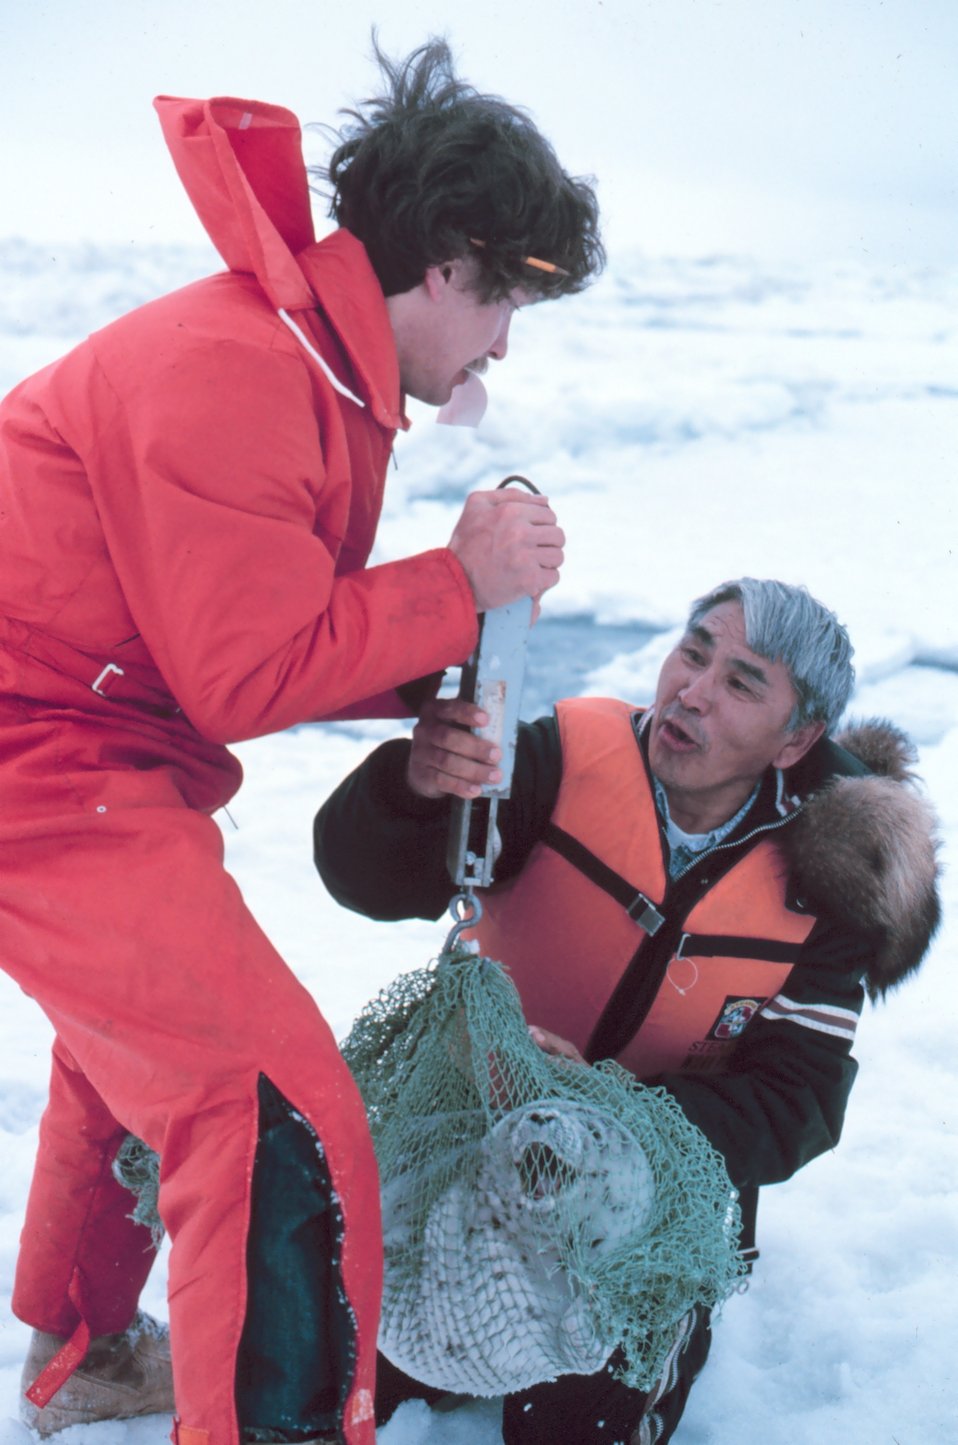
Weighing an unhappy spotted seal - Phoca largha.